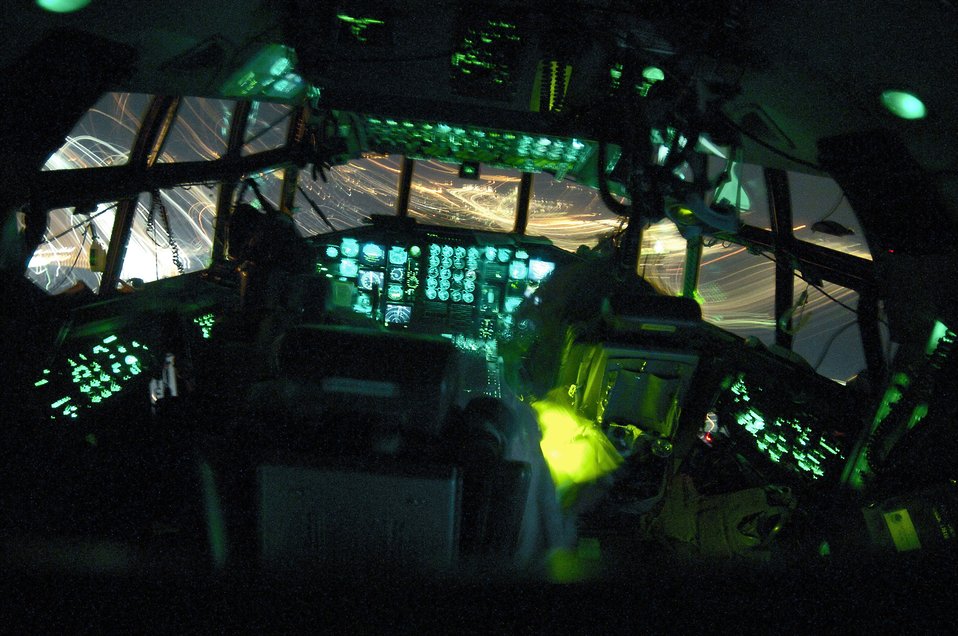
New Years' over Iraq

OVER BALAD AIR BASE, Iraq (AFPN) -- In the shadows of their C-130 Hercules' flight deck, (left to right) pilot Maj. Mike Wilson, flight engineer Senior Master Sgt. Ernie Leyba and co-pilot Capt. Tim Pemberton approach for a landing at Balad Air Base. The crew flew a New Year's Eve mission to deliver 13 passengers and 13,000 pounds of cargo -- landing at Balad in 2006. Members of the Air Force Reserve Command's 731st Airlift Squadron, the crew is ending a Southwest Asia tour with the 746th Expeditionary Airlift Squadron.